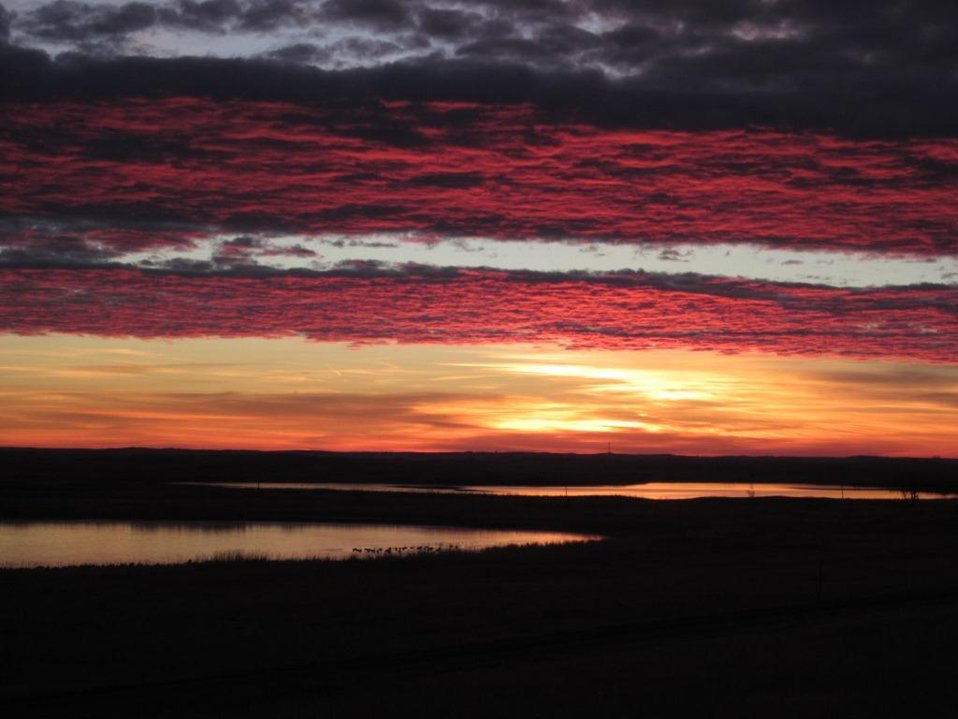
Chase Lake NWR/WMD/PP Headquarters Sunrise

This sunrise was captured right behind Chase Lake NWR/WMD/PP Headquarters. As you can see, these wetlands reflect the gorgeous sunrise colors. The Canada geese in the wetland are enjoying the morning too!